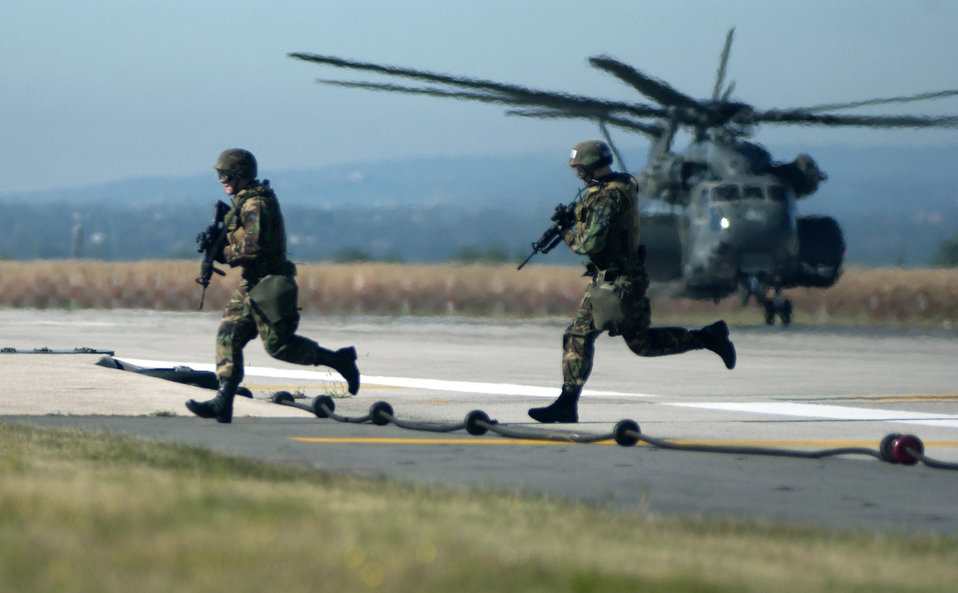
Joint training

AVIANO AIR BASE, Italy -- Airmen assigned to the 31st Security Forces Squadron and Italian carabinieri (state police) exit a U.S. Navy's MH-53E Sea Dragon during joint helicopter deployment training here recently.